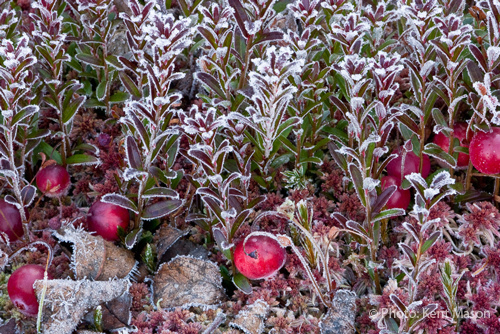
Fresh Frozen Cranberries

Cranberries are typically found in bogs at more northern latitudes, but are also in Canaan Valley, West Virginia.